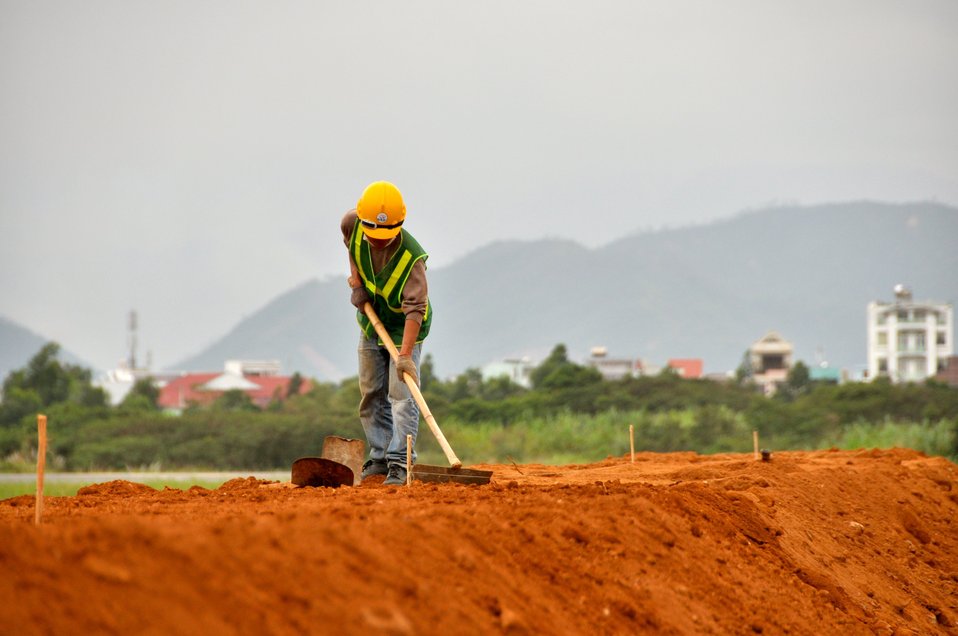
Site Preparation for Environmental Remediation of Dioxin Contamination at Danang Airport

Danang Airport, January 22, 2013